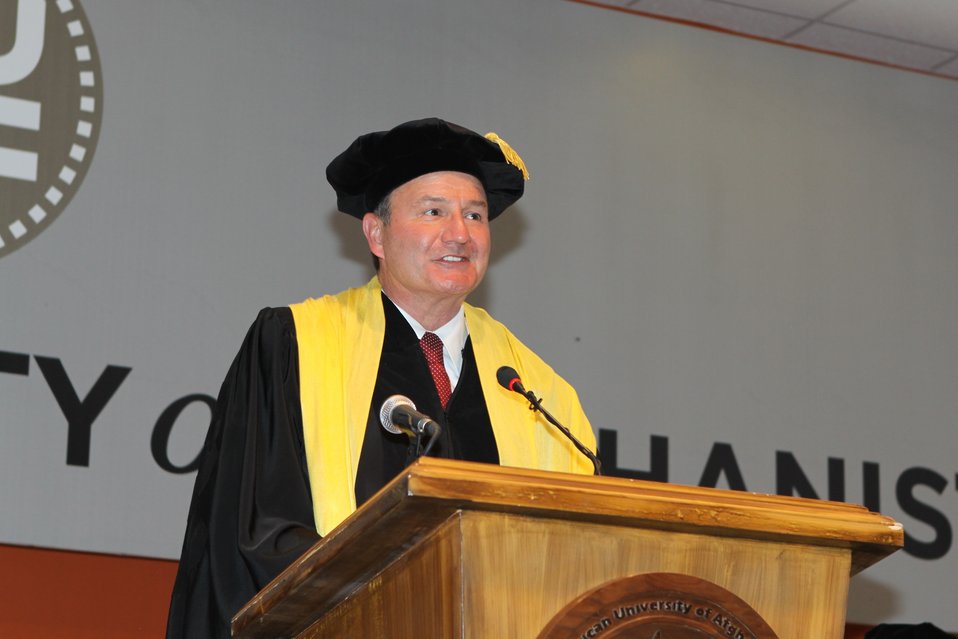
100526 AUAF Graduation 200